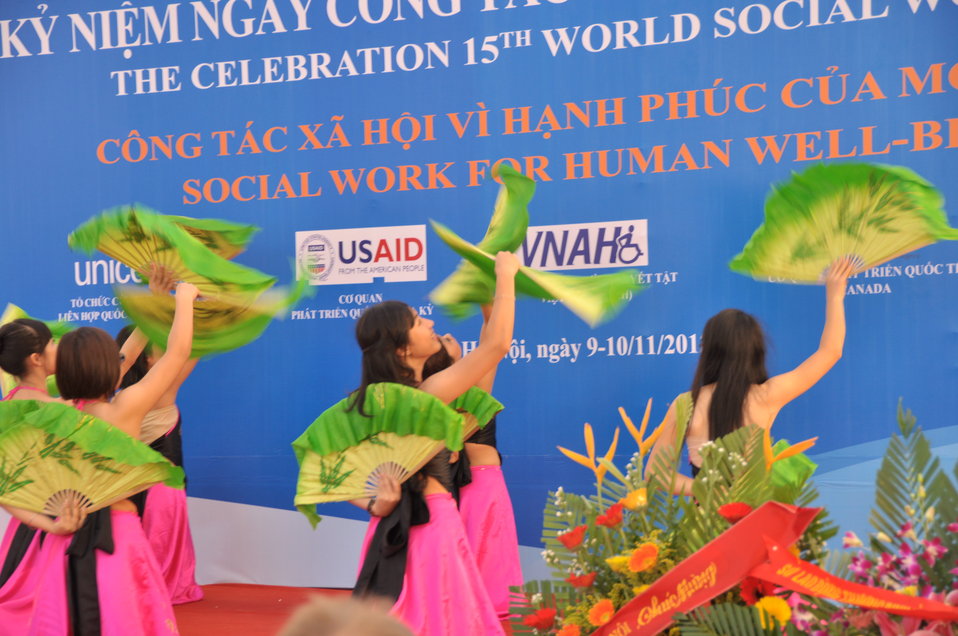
USAID Supports Social Work Education

Photo: @USAIDVietnam, November 9, 2012